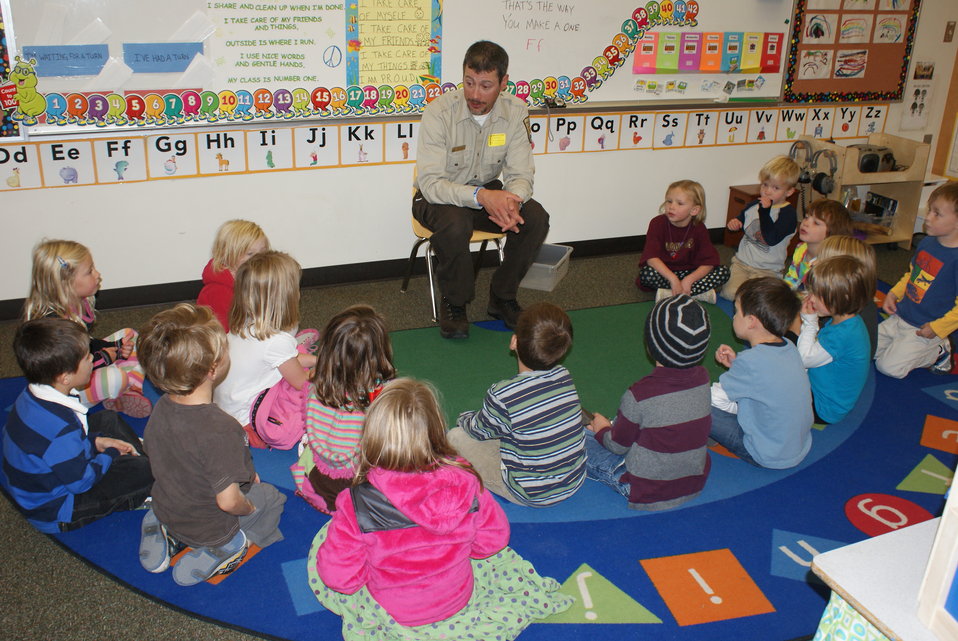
Scientists in the Community Program

U.S. Fish and Wildlife Service Mountain-Prairie Region Deputy ARD for External Affairs, Matt Kales, introduces early childhood education students at William Roberts Elementary School in Denver to some of Colorado's native and historic wildlife species.